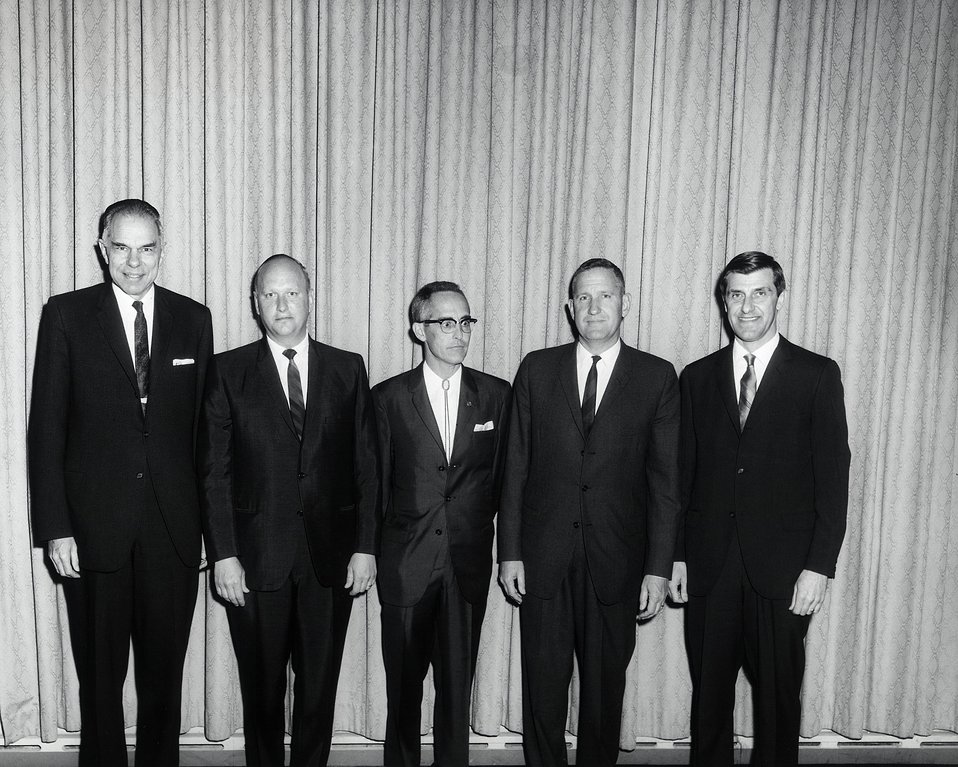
7th E.O. Lawrence Award Ceremony, April 27, 1966, Wash., D.C. Left to Right: Chairman Seaborg, Mr. Vanstrum, Dr. Anderson, Dr. Agnew, Dr. Huizenga.